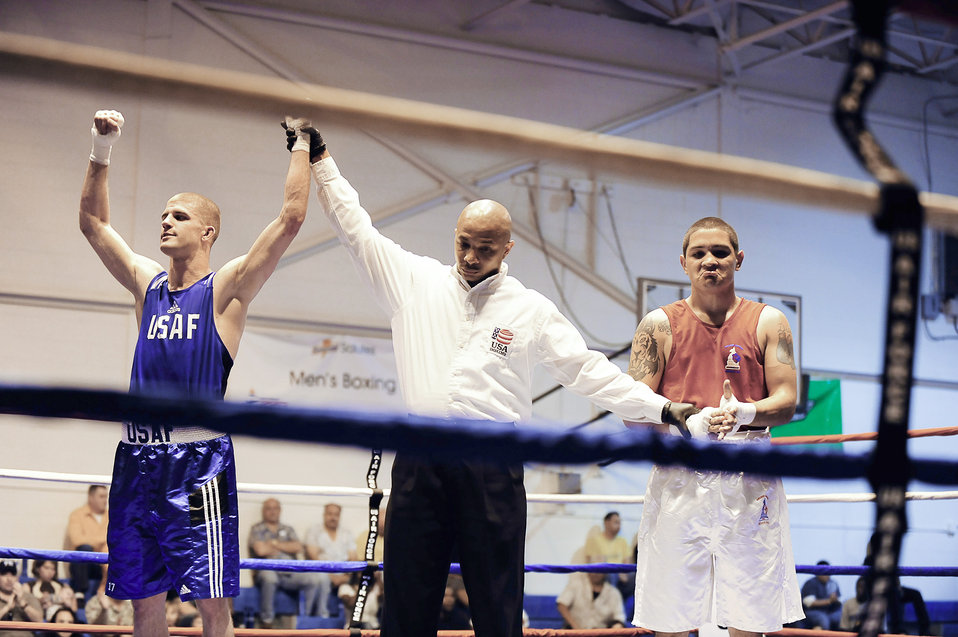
Contenders box for a spot

Senior Airman Matt McCoy defeats his opponent during the Air Force Boxing Championships at the Bennett Fitness Center at Lackland Air Force Base, Texas, April 4, 2010.